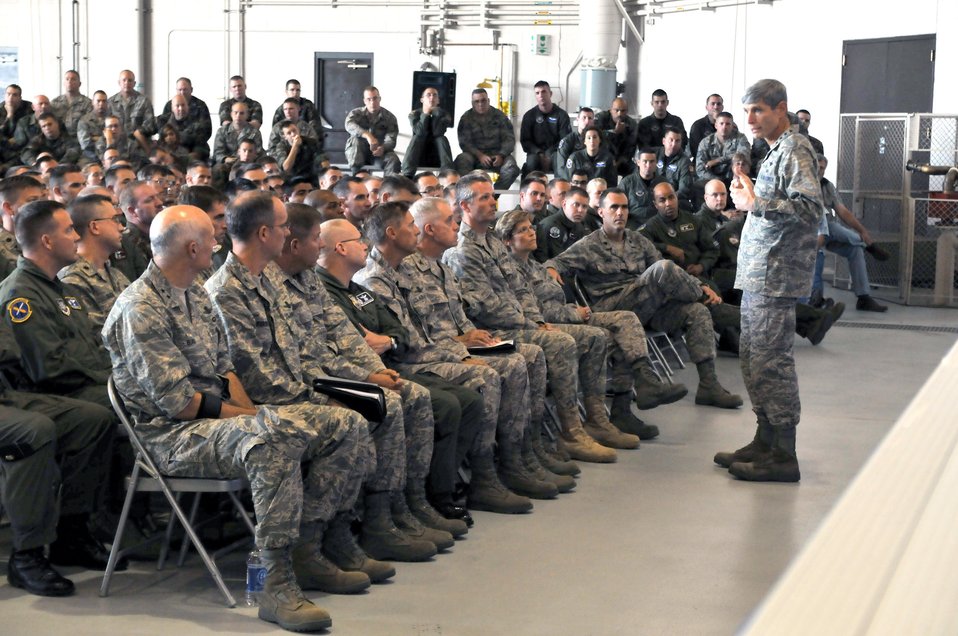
Top leaders stress importance of excellence, keeping a promise

Gen. Norton A. Schwartz, Air Force chief of staff, addresses Malmstrom Air Force Base Airmen during an Airmen's Call Aug. 22. General Schwartz and Acting Secretary of the Air Force, Michael B. Donley, visited Malmstrom for a first-hand look at the Intercontinental Ballistic Missile mission.